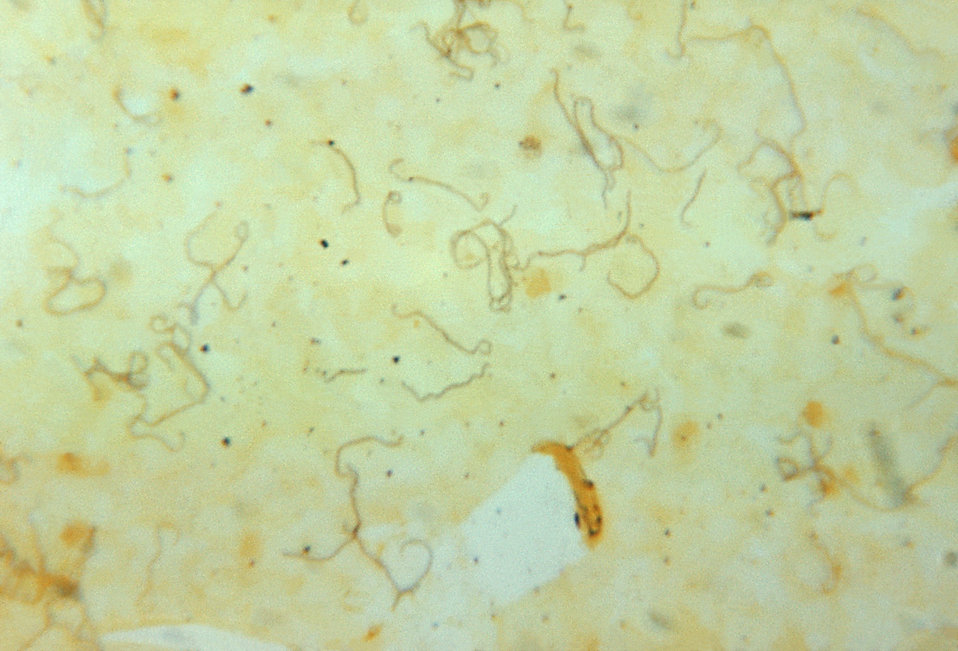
A photomicrograph of a liver smear, using a silver staining technique, taken from a patient with a fatal case of Leptospirosis.